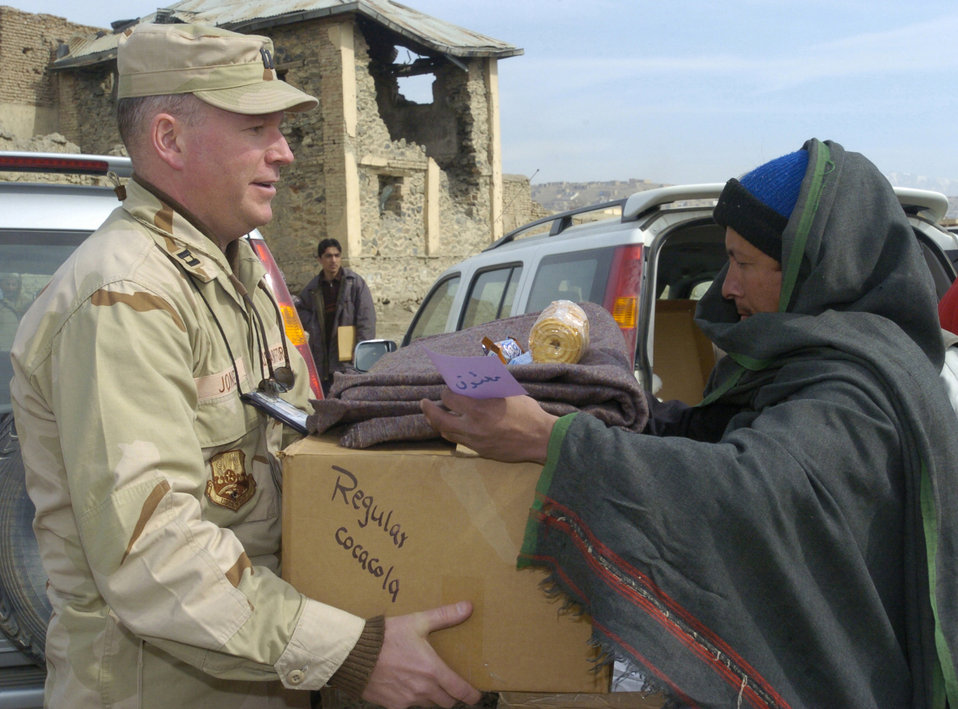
Americans reach out, help Afghans

KABUL, Afghanistan -- Capt. Scott Jones hands a box of donated items to an Afghan during a humanitarian visit here Feb. 22. Soldiers of the 105th Mobile Public Affairs Detachment collected more than 30 boxes of supplies from Oklahoma and Kansas, including toiletries, clothing, food, toys, school supplies and blankets for Afghan families. Captain Jones is assigned to Combined Forces Command-Afghanistan.